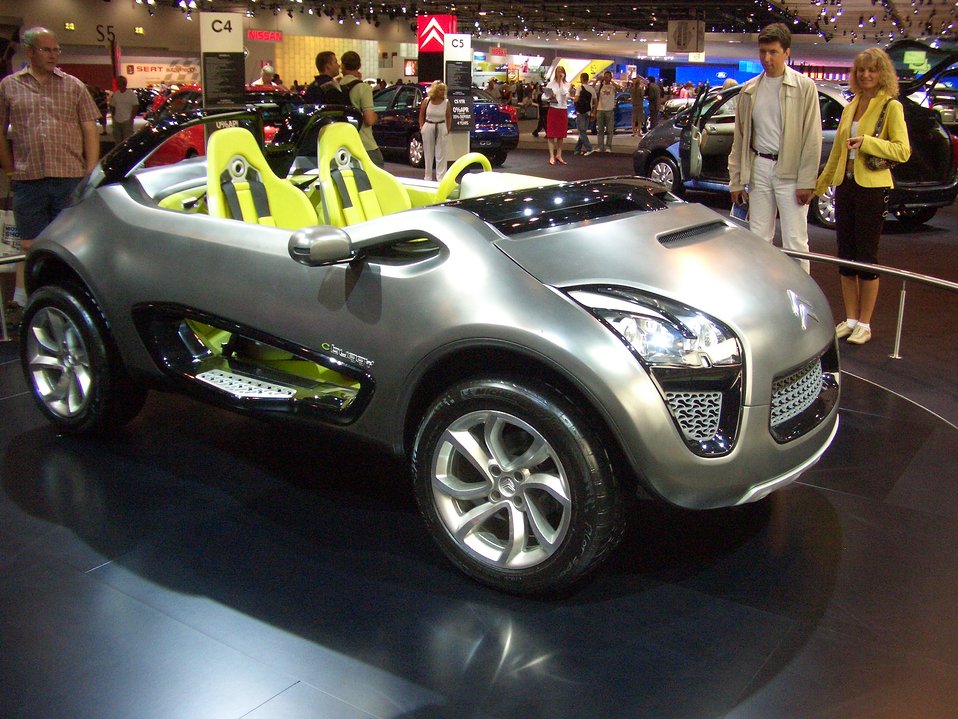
Taken by myself at the London Motorshow 2006.